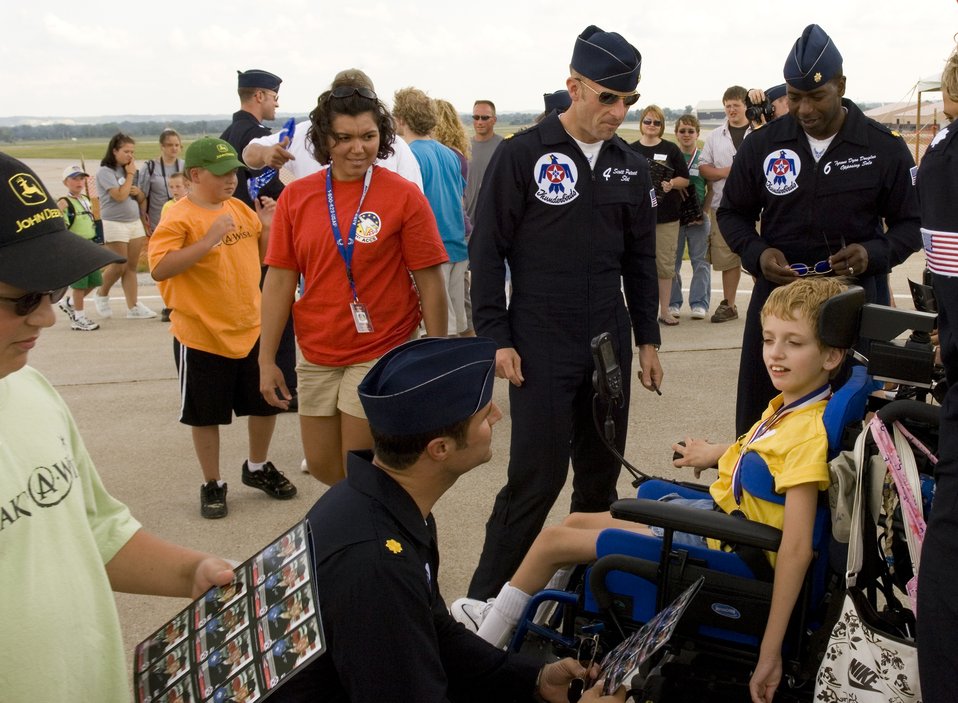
Offutt Airmen hold airshow

Majors Kirby Ensser, Scott Poteet and Dyon Douglas spend time with special needs visitors who were treated to a complete airshow Aug 15 at Offutt Air Force Base, Neb. Majors Ensser, Poteet and Douglas are Thunderbirds 3, 4 and 6, with the Air Force Demonstration Squadron.